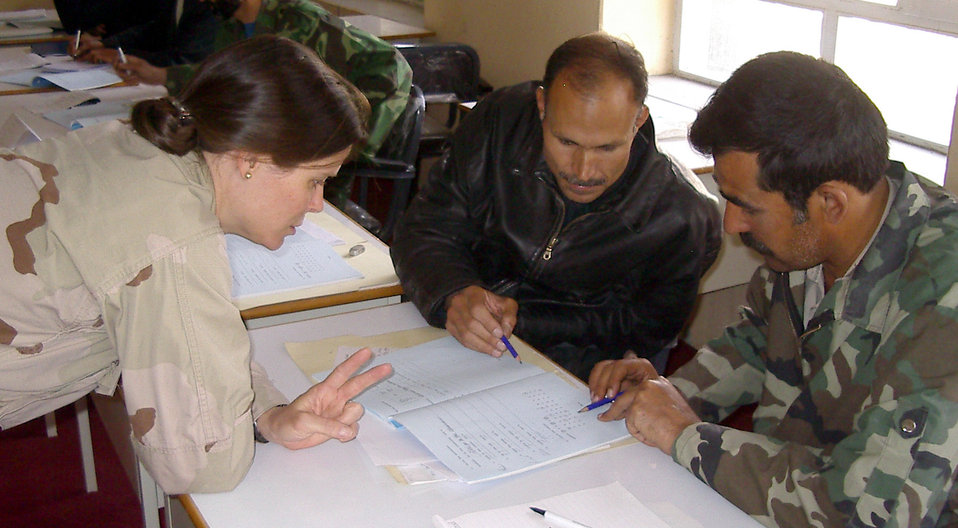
Basic English

KABUL, Afghanistan -- Maj. Susan Washington helps Afghan air force pilots, Col. Abdul Zaher (left) and Capt. Hafizullah, with their English. She teaches a basic-English class to 10 Afghan air force senior pilots.